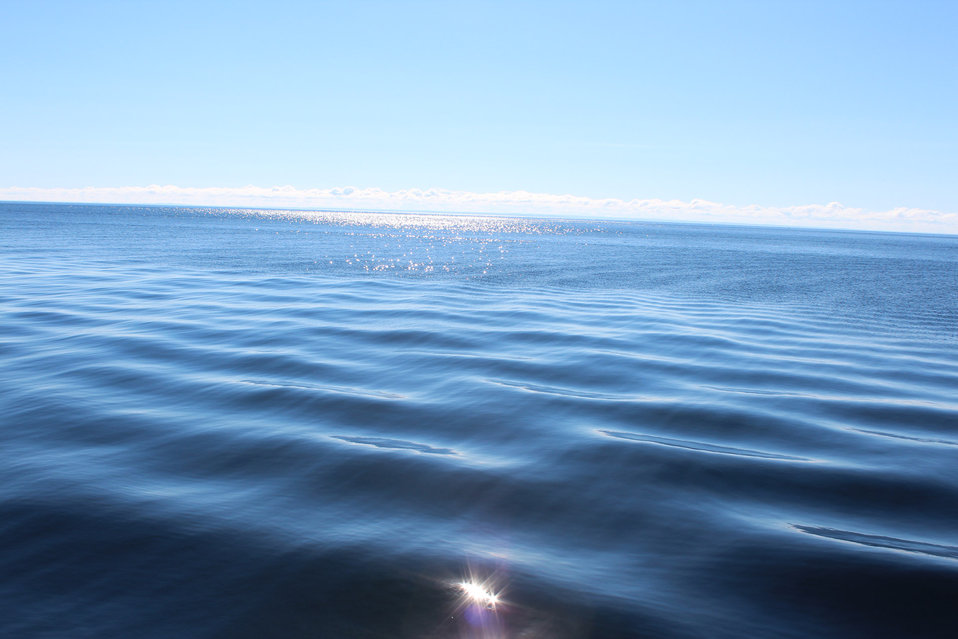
Water background

Shot of lake superior, calm water..